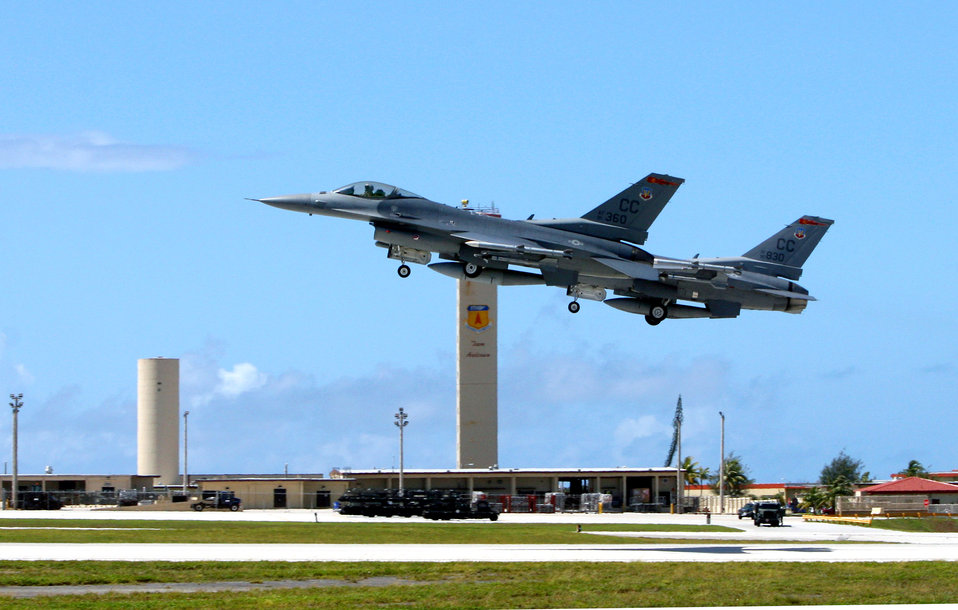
Aerial intercept training prepares warfighters

Two F-16 Fighting Falcons go